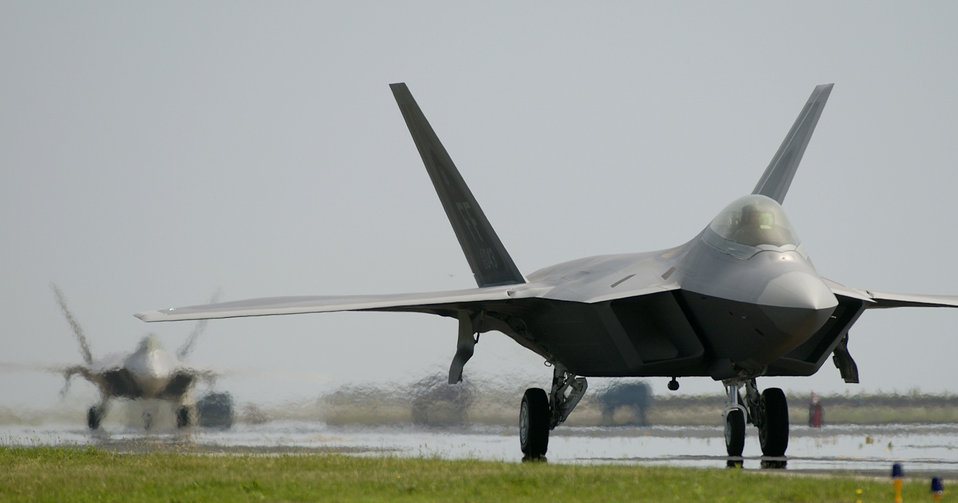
Combat Ready

LANGLEY AIR FORCE BASE, VA. (AFPN) -- Two F-22A Raptors taxi down the runway.